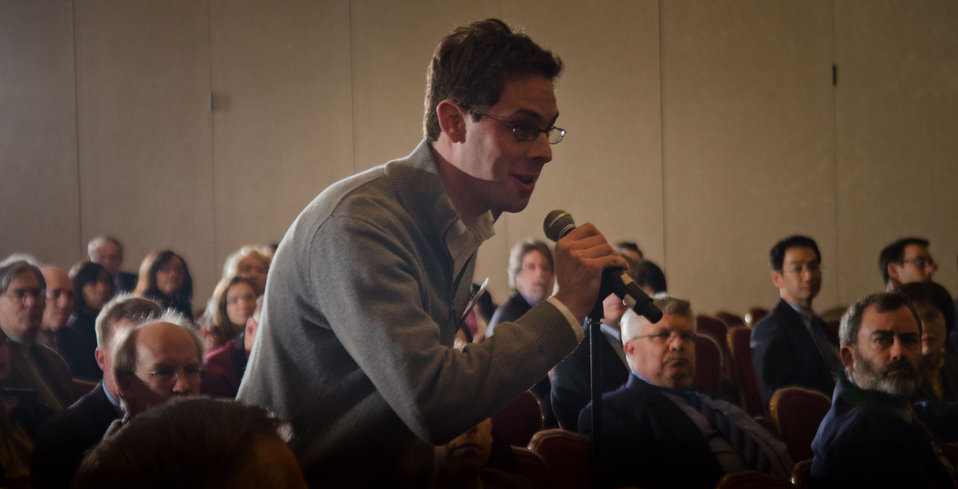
An attendee asks a question during the Renewable Energy session on “Moving Renewable Energy Forward,” at the 2012 Agricultural Outlook Forum, “Moving Agriculture Forward, Growing, Innovating and Celebrating 150 Years” held at the Crystal Gateway Marriott Hotel in Arlington, Virginia, on Thursday, February 23, 2012. This year’s forum coincides with the 150th anniversary of the Department of Agriculture addressing economics, marketing, research, food safety, nutrition, conservation, rural development, alternative energy, trade and many other agricultural issues.